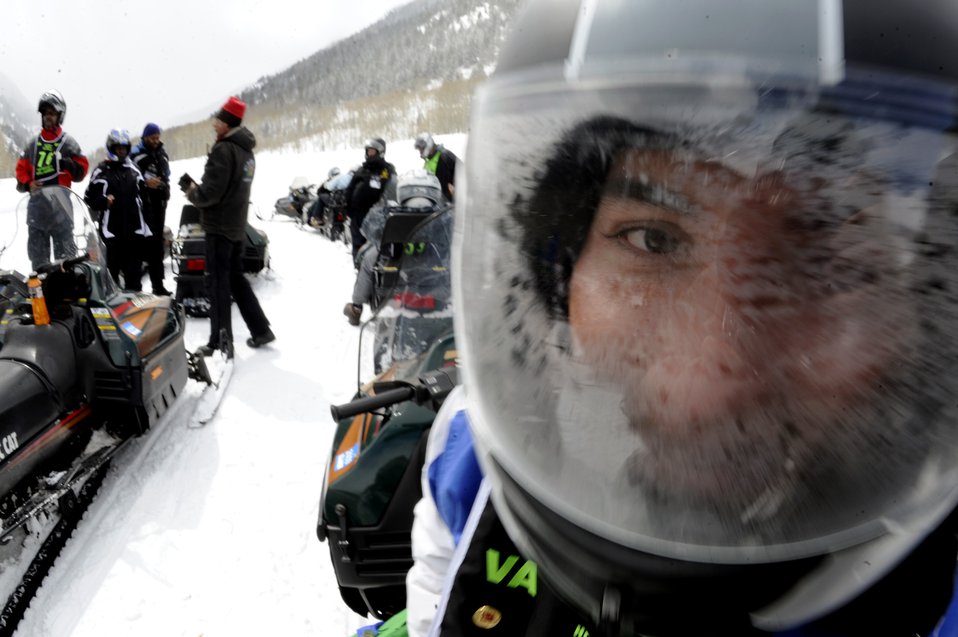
23rd National Disabled American Veterans Winter Sports Clinic

Senior Airman Kevin Krogh fogs up his helmet during a hot cider break after driving a snowmobile Apr. 1 during the 23rd National Disabled American Veterans Winter Sports Clinic in Snowmass Village, Colo. Airman Krogh lost both legs in a major car accident in 2007 and this is his first year attending the sports clinic. Airman Krogh is assigned to Fort Sam Houston in San Antonio.